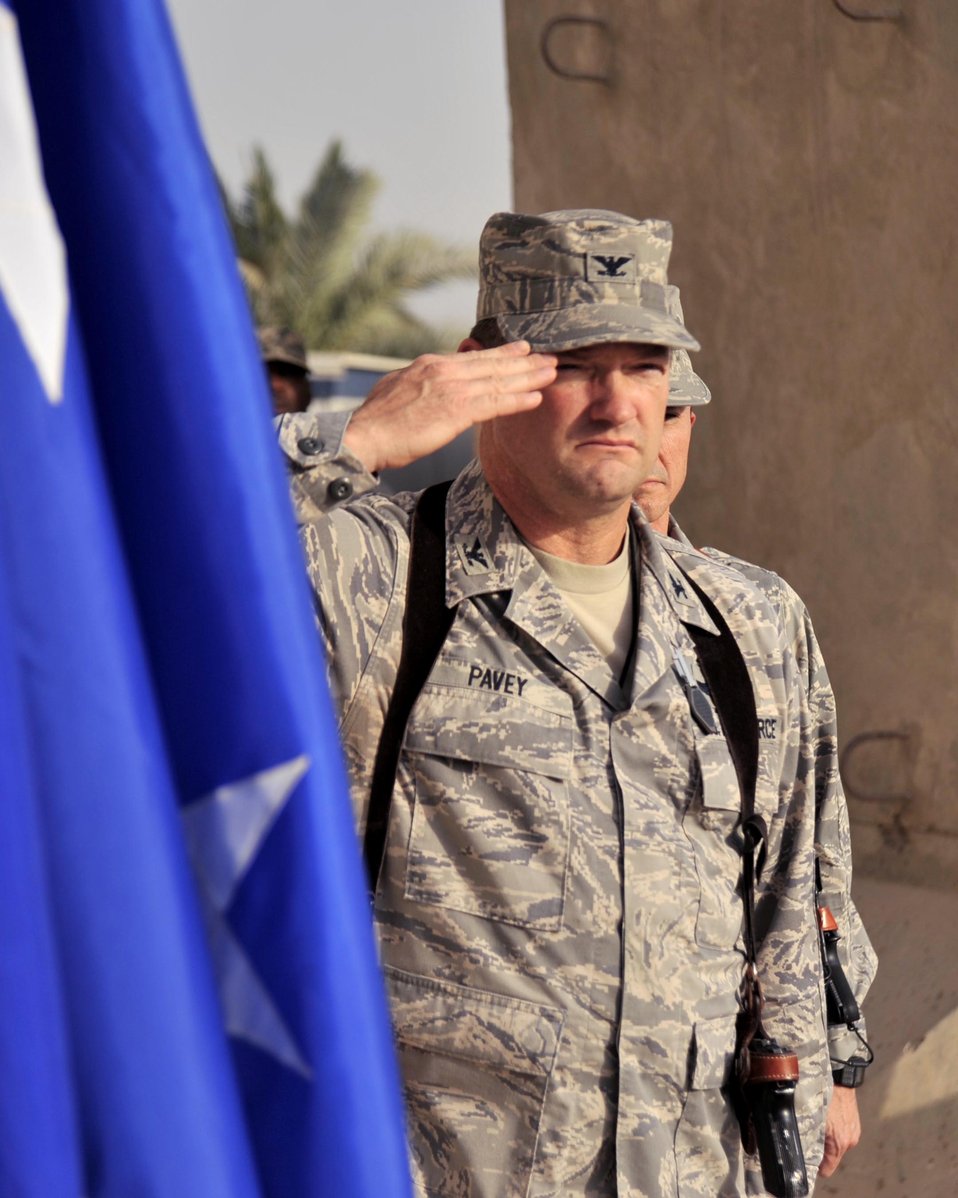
One moment in time changes the course of history

Col. David Pavey salutes during the national anthem at a ceremony marking the seven-year anniversary of the terrorist attacks of Sept. 11, 2001, Sept. 11 at Sather Air Base, Iraq. Colonel Pavey is the 447th Air Expeditionary Group commander.